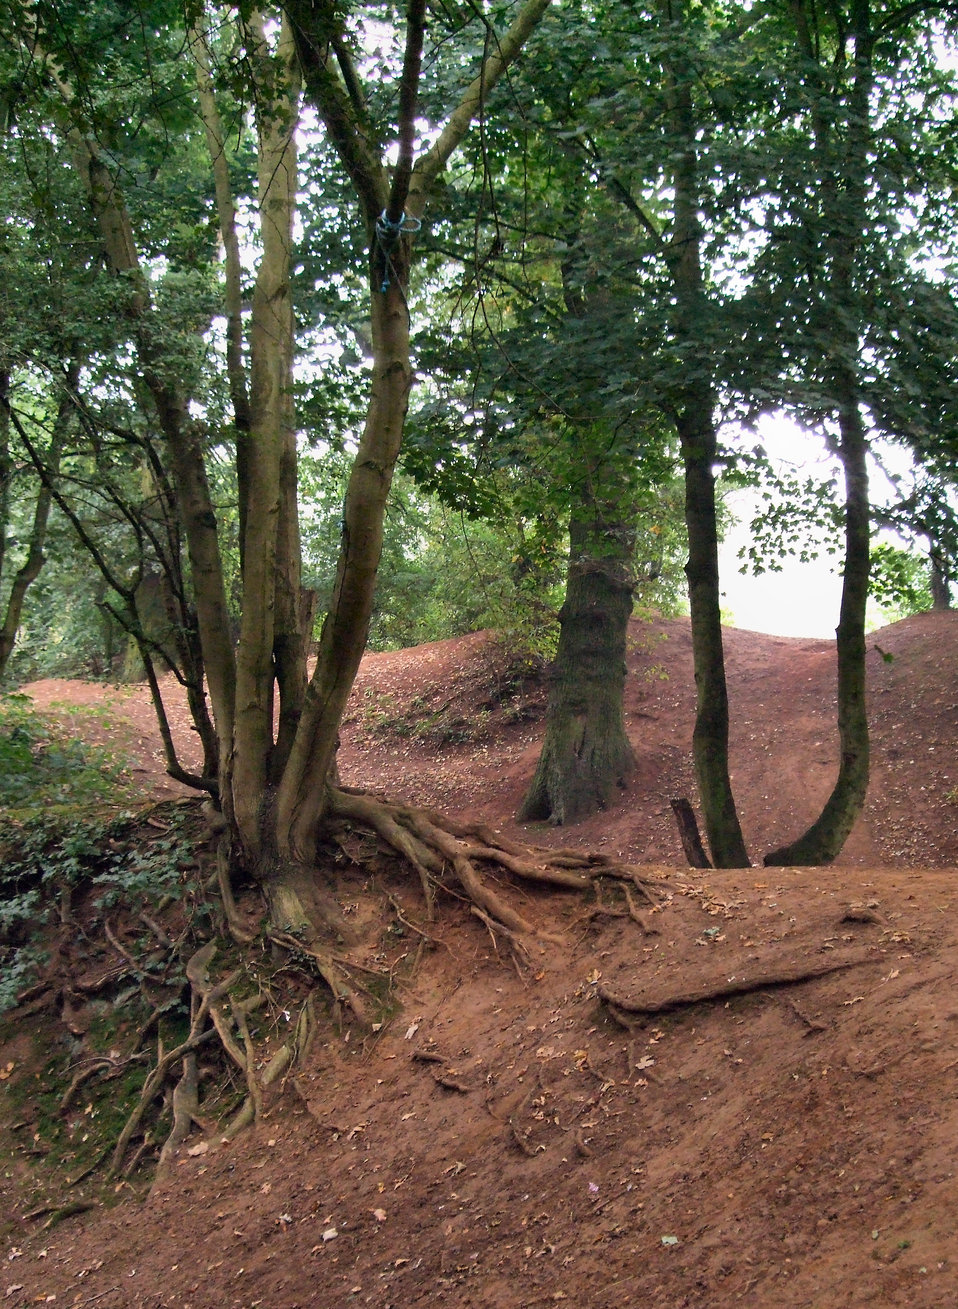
Danes camp hill fort, earthworks, Northamptom